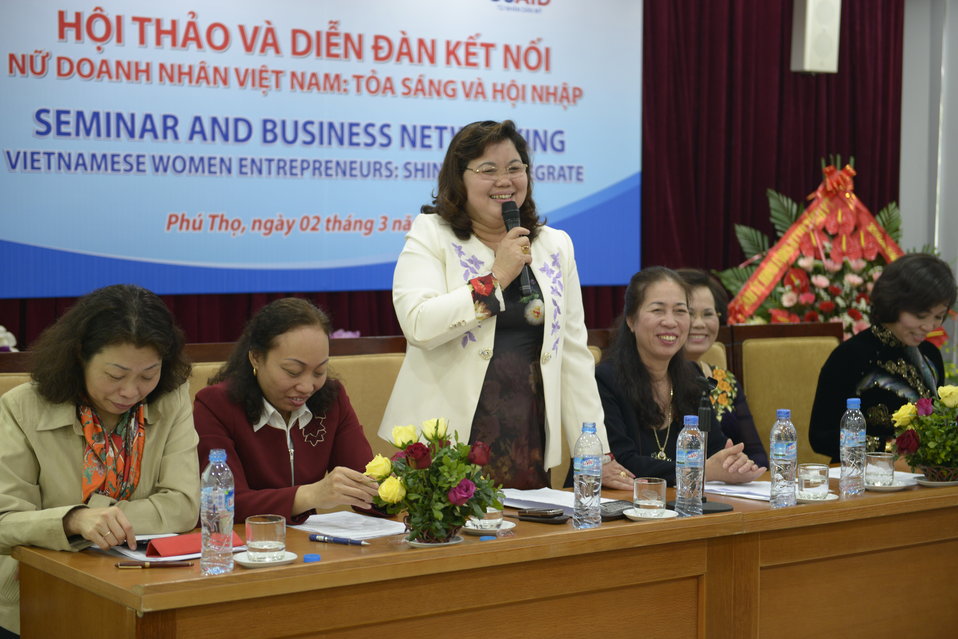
International Women's Day Seminar for female entrepreneurs

Phu Tho, Vietnam. March 1, 2014.